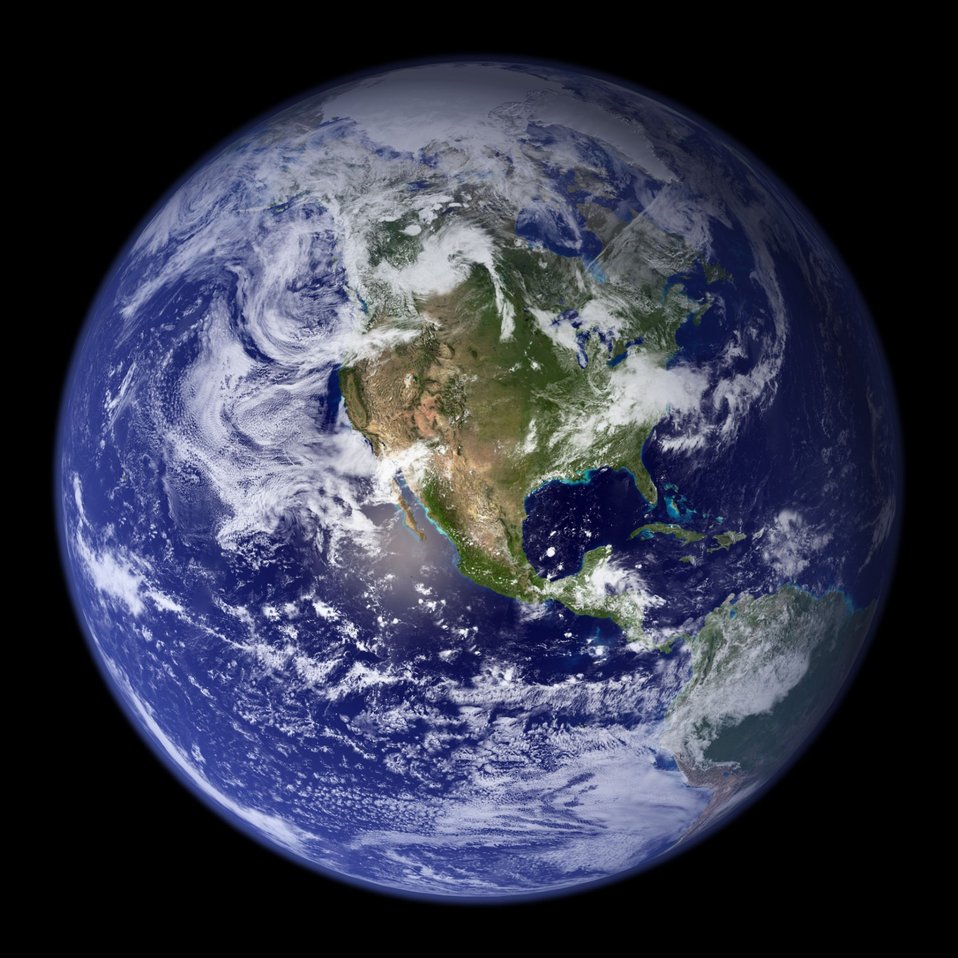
Planet earth

This is a public domain image created by nasa..